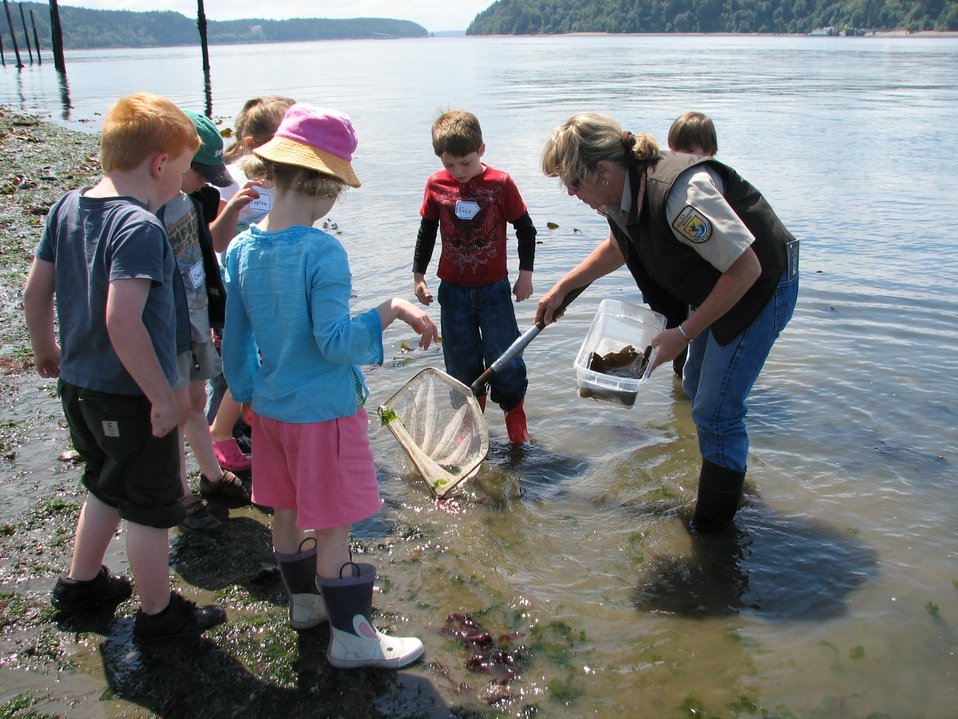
The Coastal Program Connects Youth with Nature

The Coastal Program works with schools to connect youth with nature.